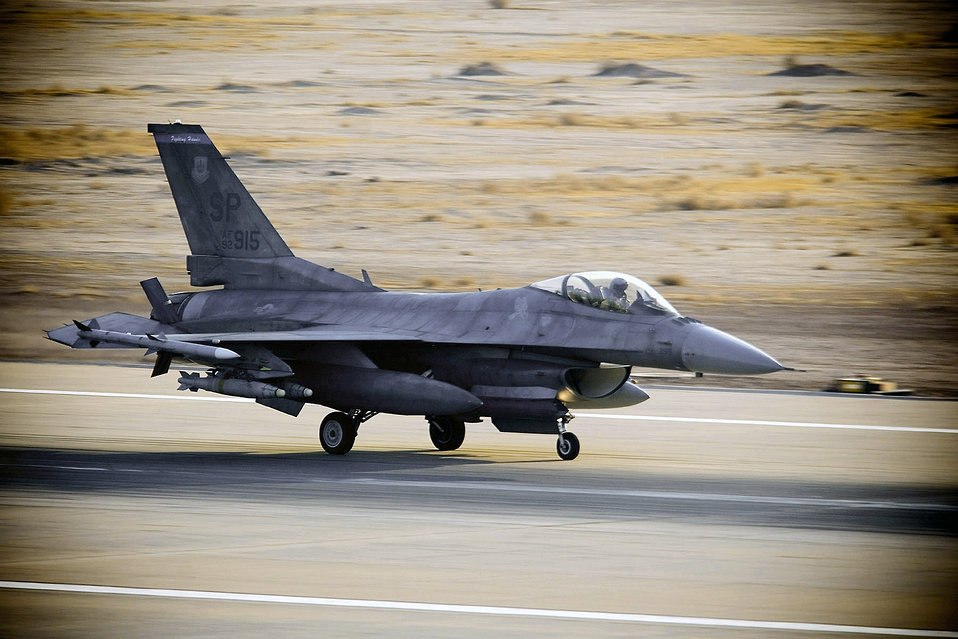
F-16s deter anti-Afghan forces

An F-16 Fighting Falcon lands at an air base in Southwest Asia after a mission in support of Operation Iraqi Freedom.